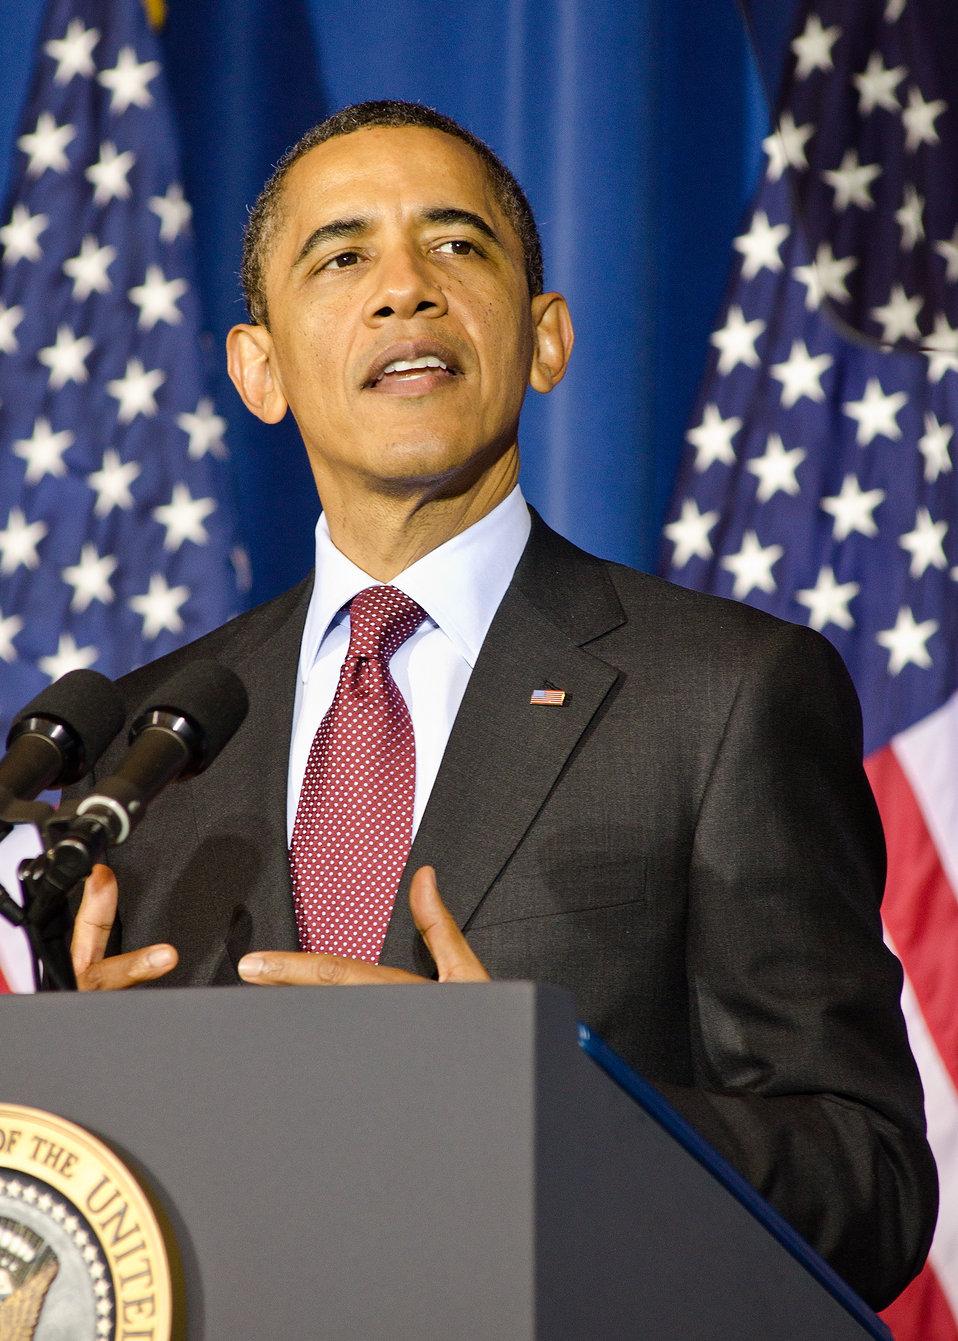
President Barack Obama addressed the audience at the White House Conservation Conference, “Growing America’s Outdoor Heritage and Economy” at the Interior Department, Yates Auditorium in Washington, D.C., on Friday, March 2, 2012 The conference is part of President Obama’s, “America’s Great Outdoors Initiative” to spotlight community-driven conservation efforts and discussed how to build their success.